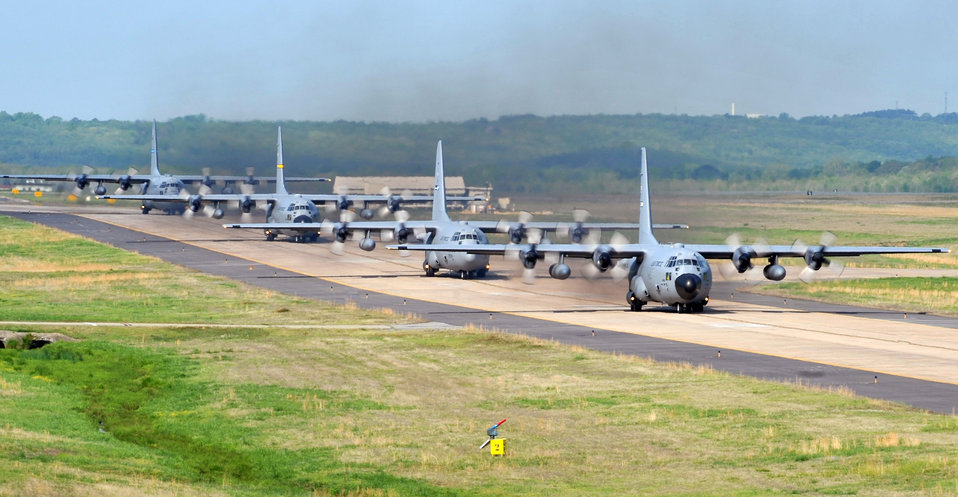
Surge week

Several C-130 Hercules taxi in preparation for takeoff April 14, 2011, at Little Rock Air Force Base, Ark.